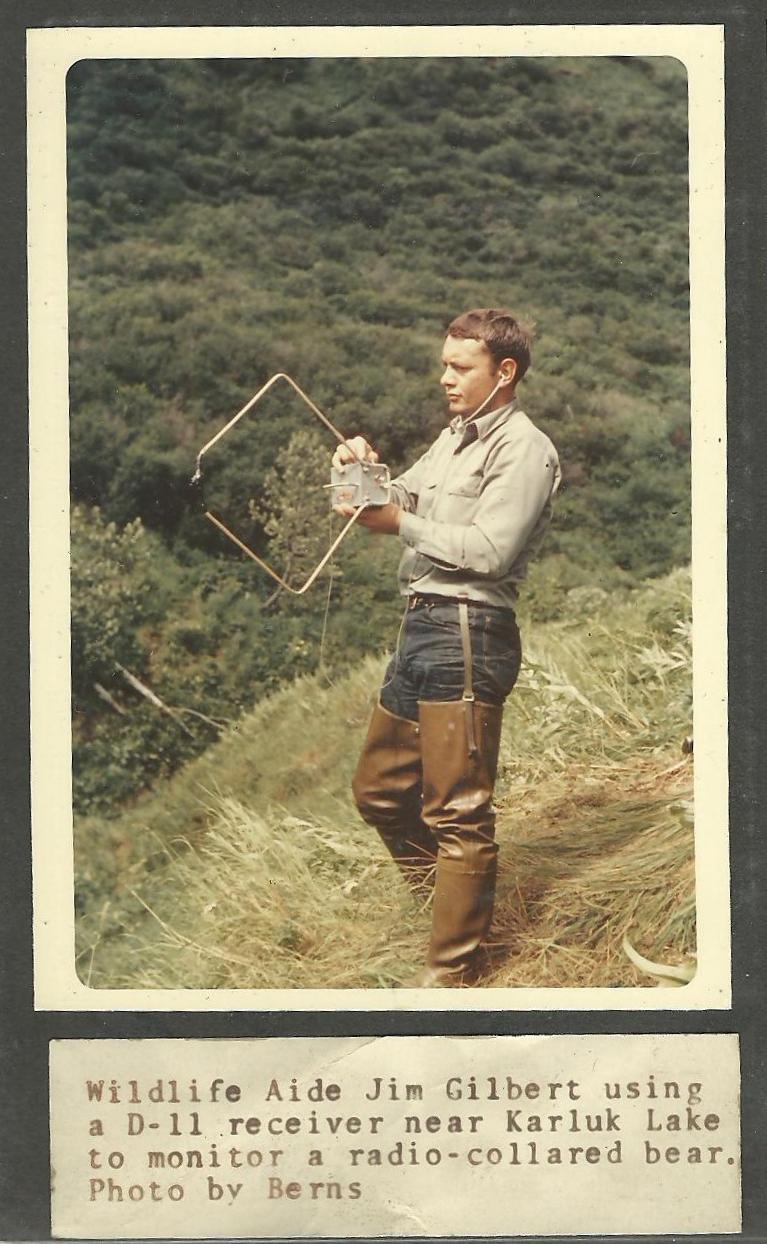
(1968) Radio Collar Monitoring

Credit: USFWS

Source and Contact: Kodiak National Wildlife Refuge